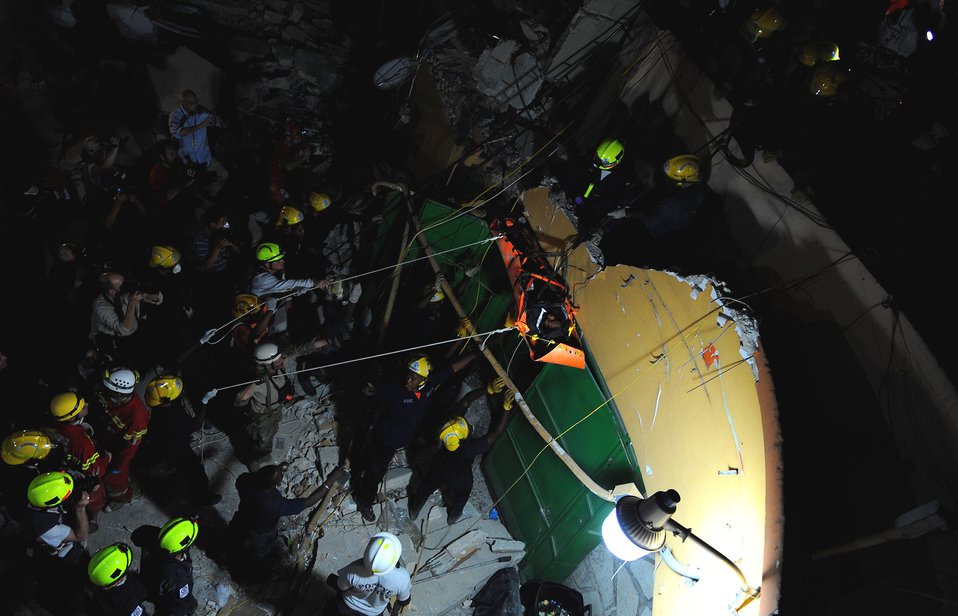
AFSOC pararescuemen work to save lives

Members of various rescue teams, including Air Force Special Operations pararescuemen, move a 25-year-old Haitian woman into an ambulance Jan. 19, 2010, in Port-au-Prince, Haiti. The woman had been trapped for seven days following the earthquake that hit the country.